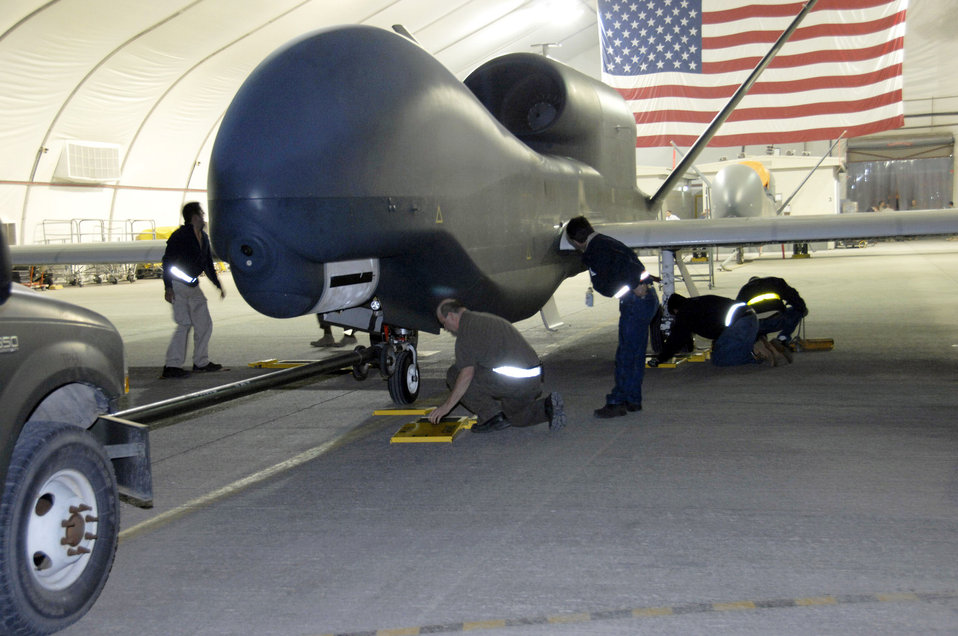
Navy Global Hawk arrives in Southwest Asia

Personnel from the Broad Area Maritime Surveillance maintenance detachment tend to a Navy Global Hawk unmanned aircraft that arrived at this airbase in Southwest Asia from Naval Air Station Patuxent River, Md. This is the first operational deployment for the BAMS aircraft after its test and development phase.